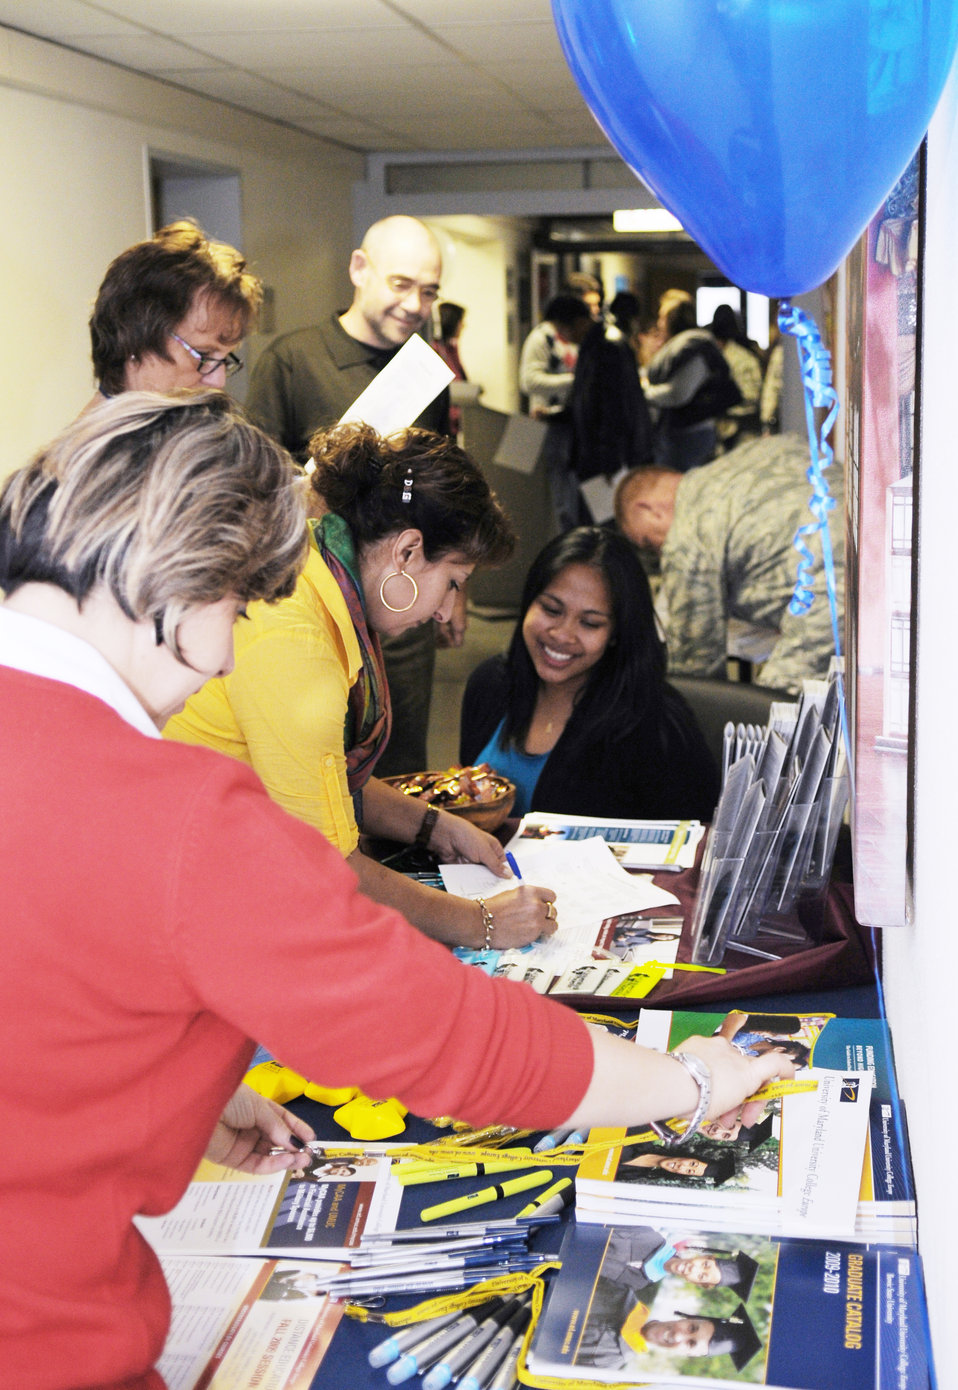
Air Force Family Week

Military members and their families come visit the Airman and Family Readiness Center open house for Air Force Family Week, Ramstein Air Base, Germany, Nov. 4, 2009. Nov 1st thru the 7th is designated by Secretary of the Air Force as